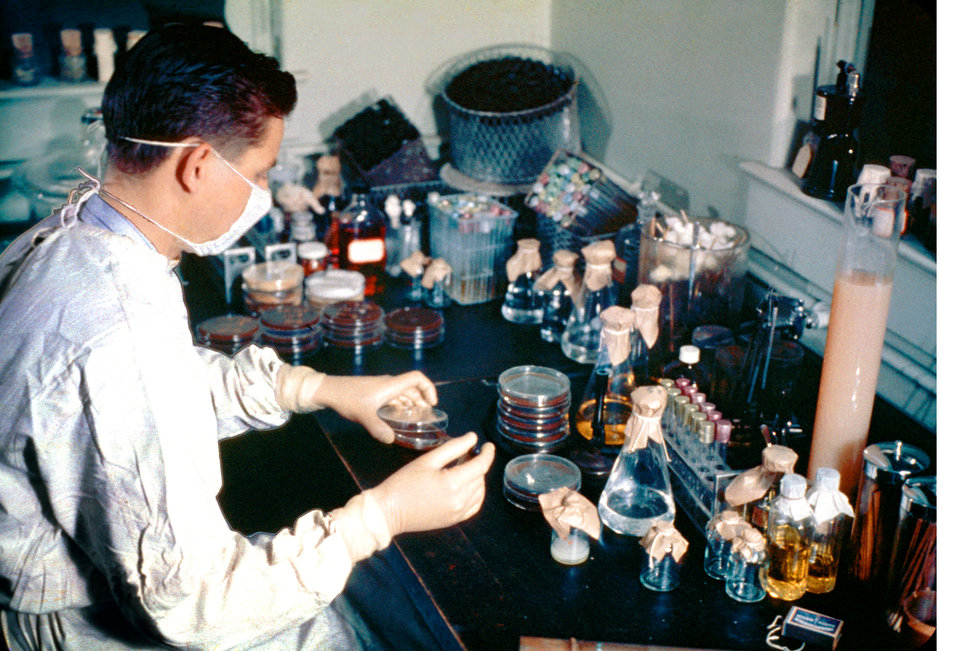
Here a technologist is carrying out Plague Studies in San Francisco, 1961.